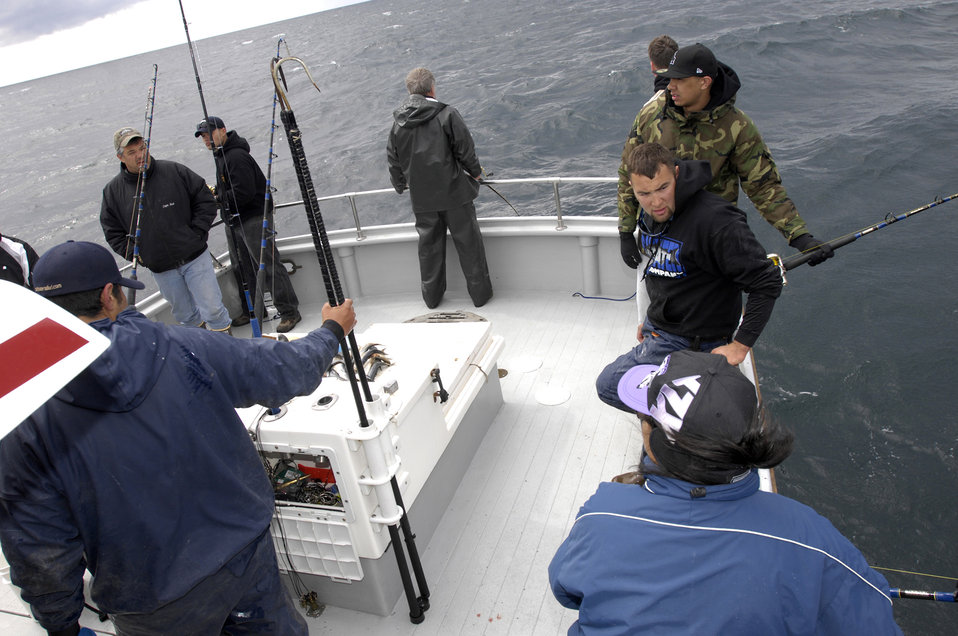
Fishing community gives back to military

Servicemembers and crewmembers prepare to fish during the third annual Armed Services Combat Fishing Tournament May 21 in Seward, Alaska. The tournament, sponsored by the Armed Services YMCA and the Seward Charter Association, is a free day of halibut charter fishing mainly for veterans of the Iraq and Afghanistan wars.